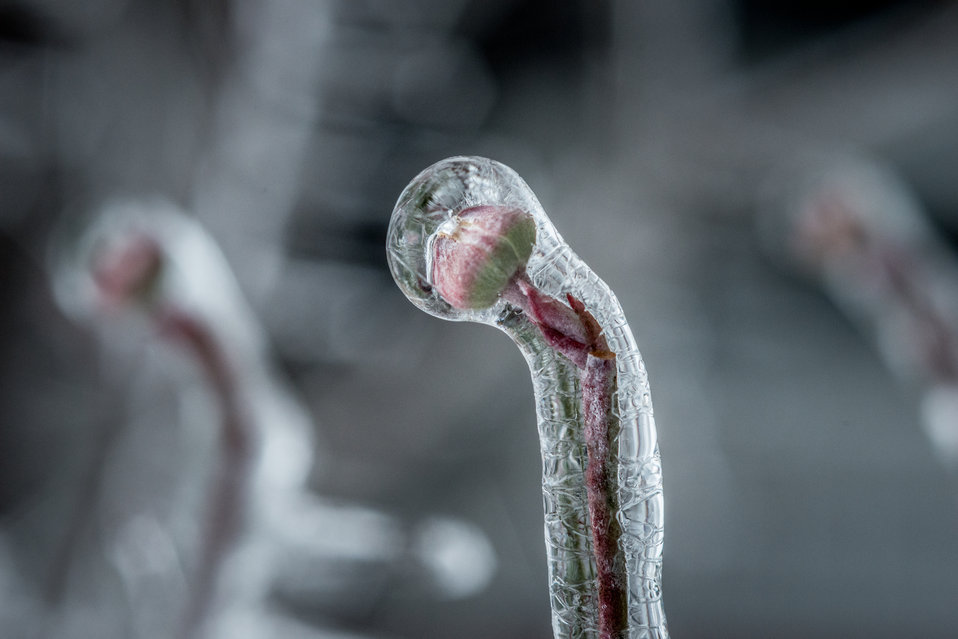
Freezing rain covers plants and trees in Falls Church, VA on Monday, Dec. 9, 2013.